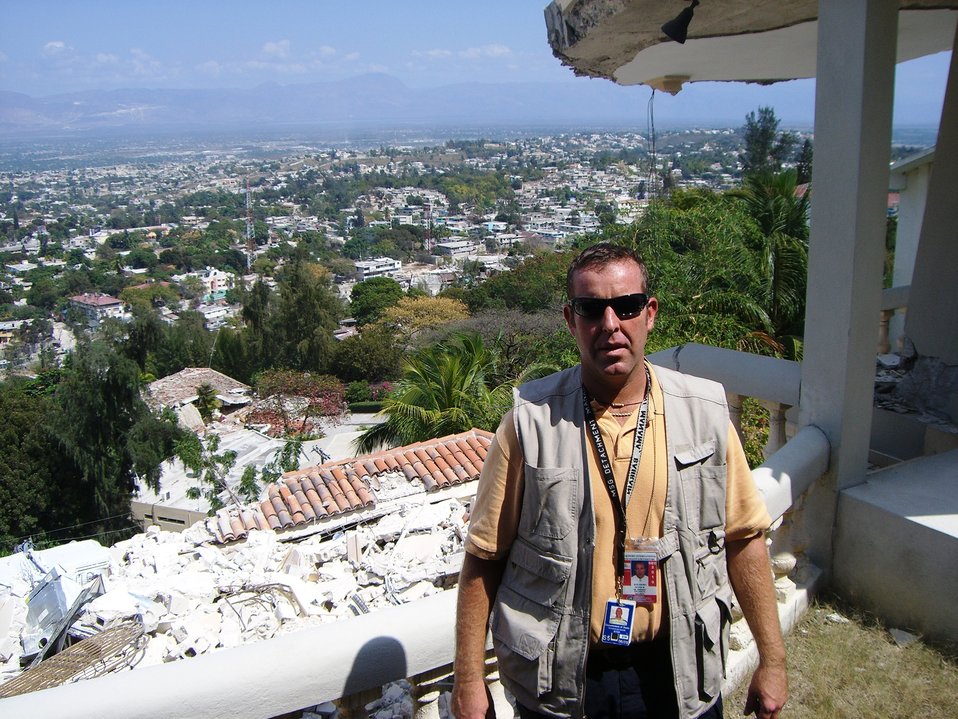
State Department Employee Pete at a Rescue Site

Public Diplomacy Officer Jon Piechowski takes a photo of his fellow State Department employee, Pete, at a rescue site in Port-au-Prince, Haiti, in January 2010.